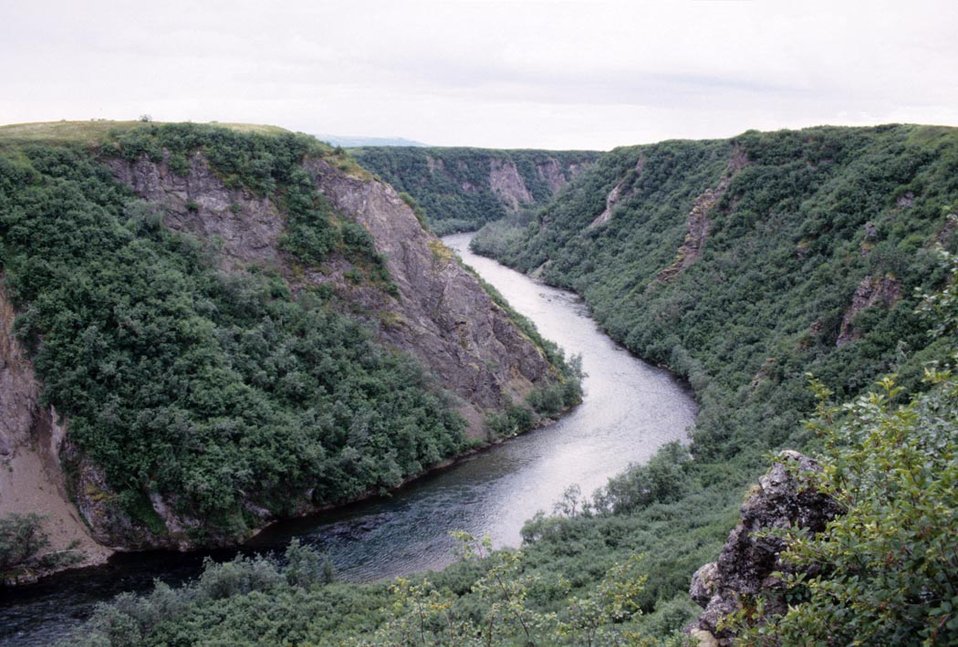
Kemuk River

View of the Kemuk River